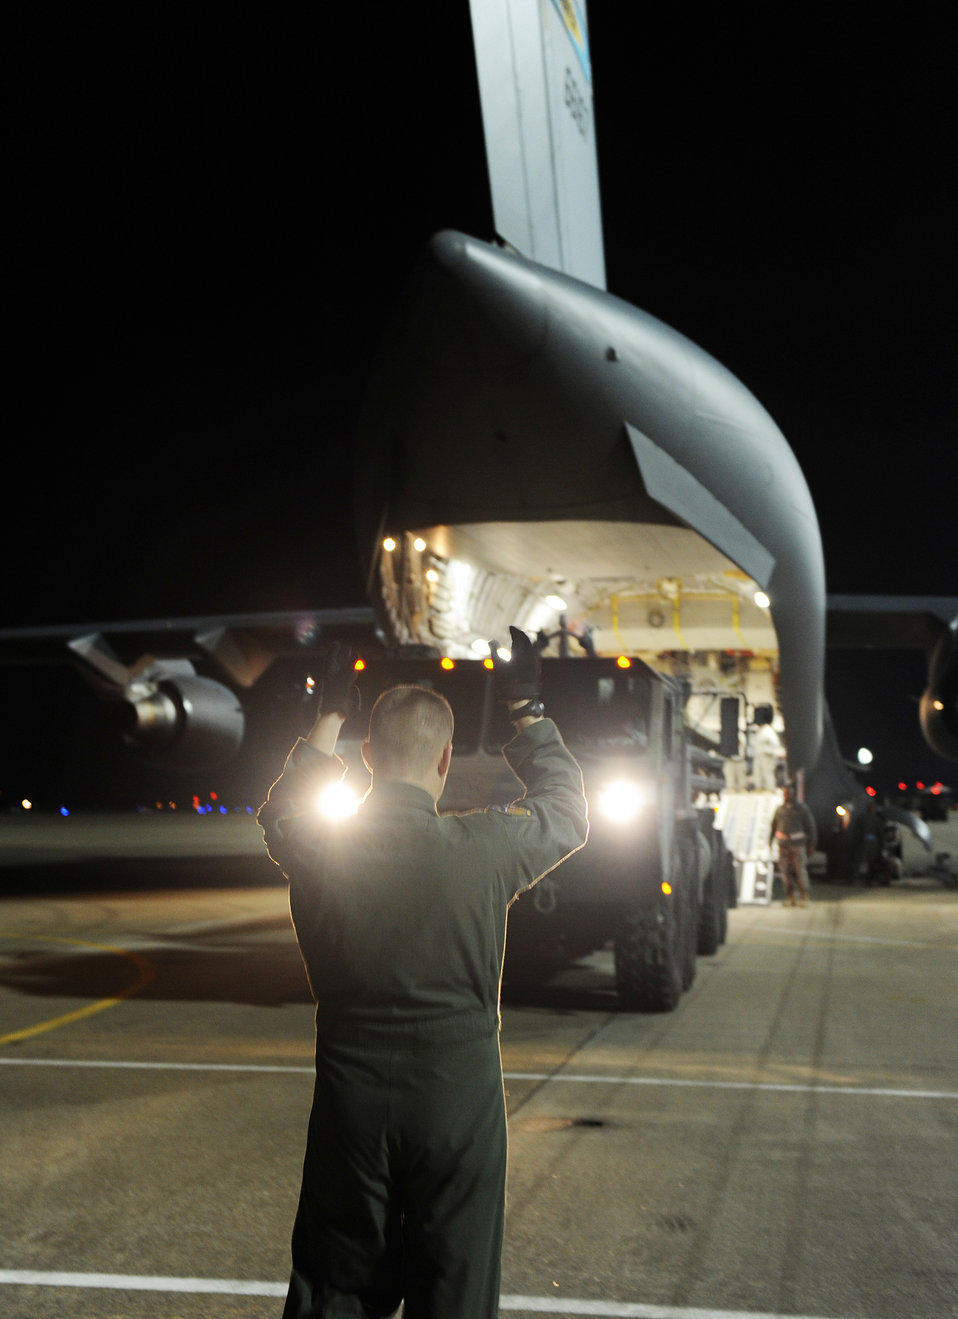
United Response

A loadmaster directs an M1120 Heavy Expanded Mobility Tactical Truck Load Handling System into a C-17 Globemaster III Jan. 19, 2010, at Langley AIr Force Base, Va. Personnel from Langley AFB and Fort Eustis, Va., worked together to load the C-17 as part Operation Unified Response. The loadmaster is assigned to the 512th Airlift Wing at Dover Air Force Base, Del.